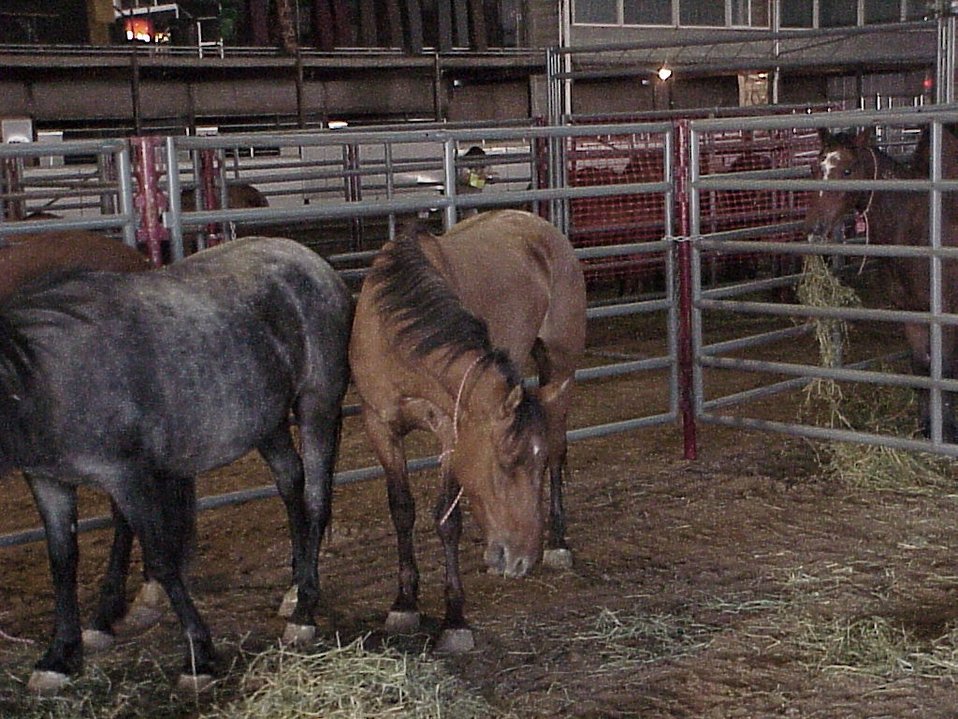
Horses Lewiston Wild Horse and Burro Adoption Program Auction WHB indoor auction Cottonwood Field Office UCSC Upper Columbia Salmon Clearwater District